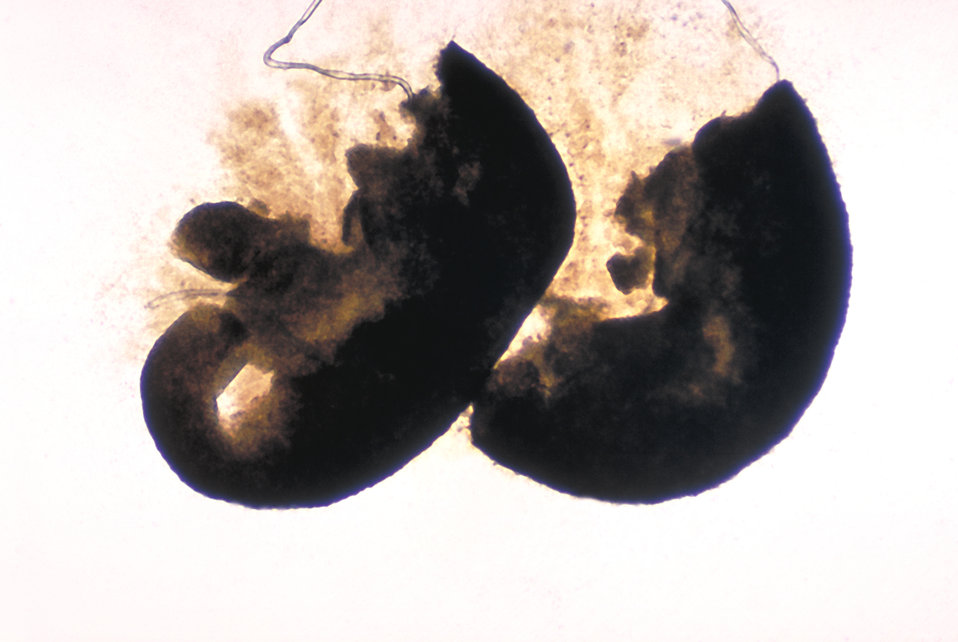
These are fresh granules of the fungus Madurella grisea processed on a KOH (potassium hydroxide) mount.